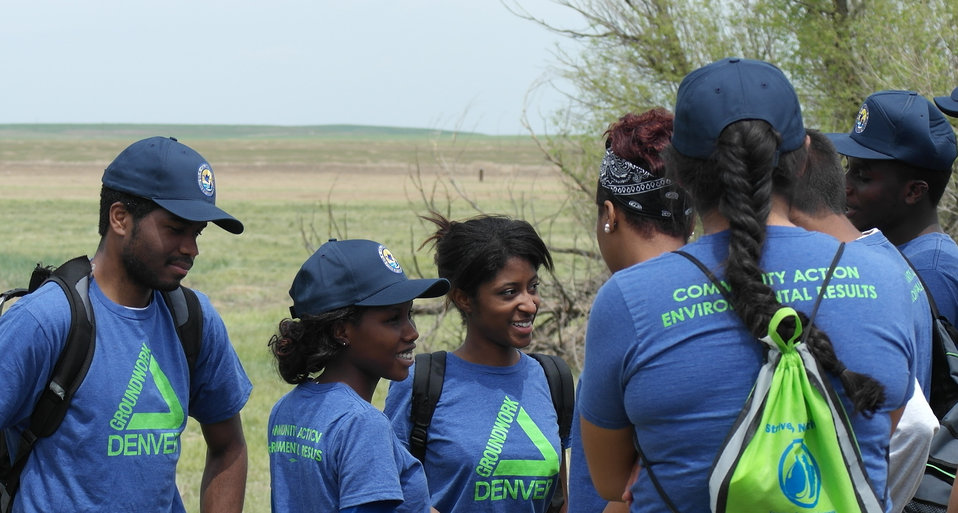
Groundwork Denver

Jewell made the announcement at an event at Rocky Mountain Arsenal National Wildlife Refuge outside Denver, Colorado, where she was joined by U.S. Department of Agriculture (USDA) Deputy Under Secretary for Natural Resources and the Environment Arthur “Butch” Blazer; Greg Knadle, Vice President for Government Relations of the National Fish and Wildlife Foundation (NFWF); Refuge Manager David Lucas and youth corps members of Groundwork Denver.